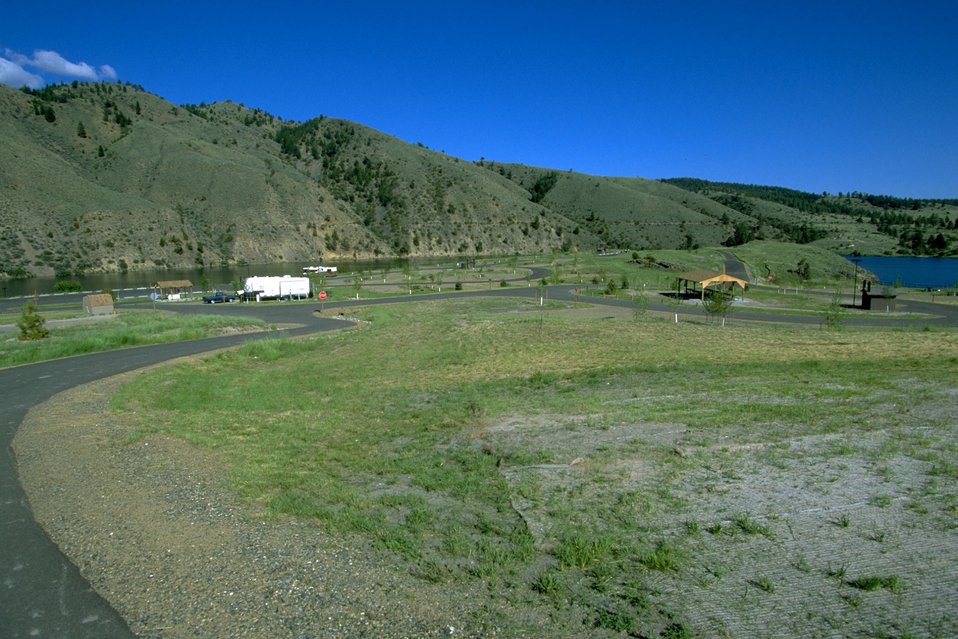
Devils Elbow Campground